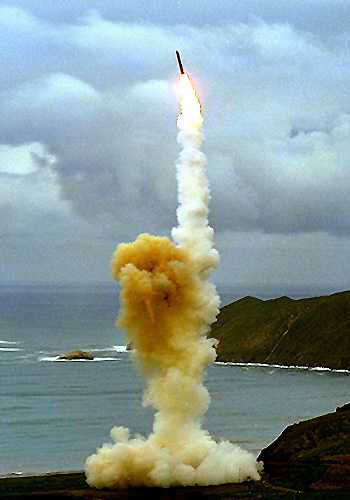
LGM-30 Minuteman III

VANDENBERG AIR FORCE BASE, Calif. -- An LGM-30 Minuteman III missile soars in the air after a test launch. The Minuteman is a strategic weapon system using a ballistic missile of intercontinental range.